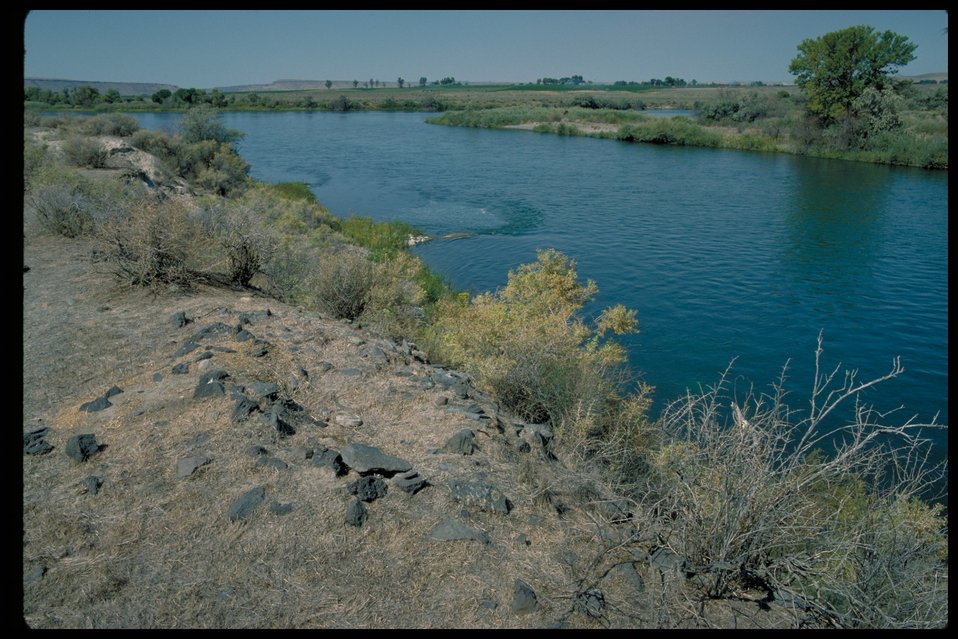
Possible grave along Snake River Oregon Trail Lower Snake River District